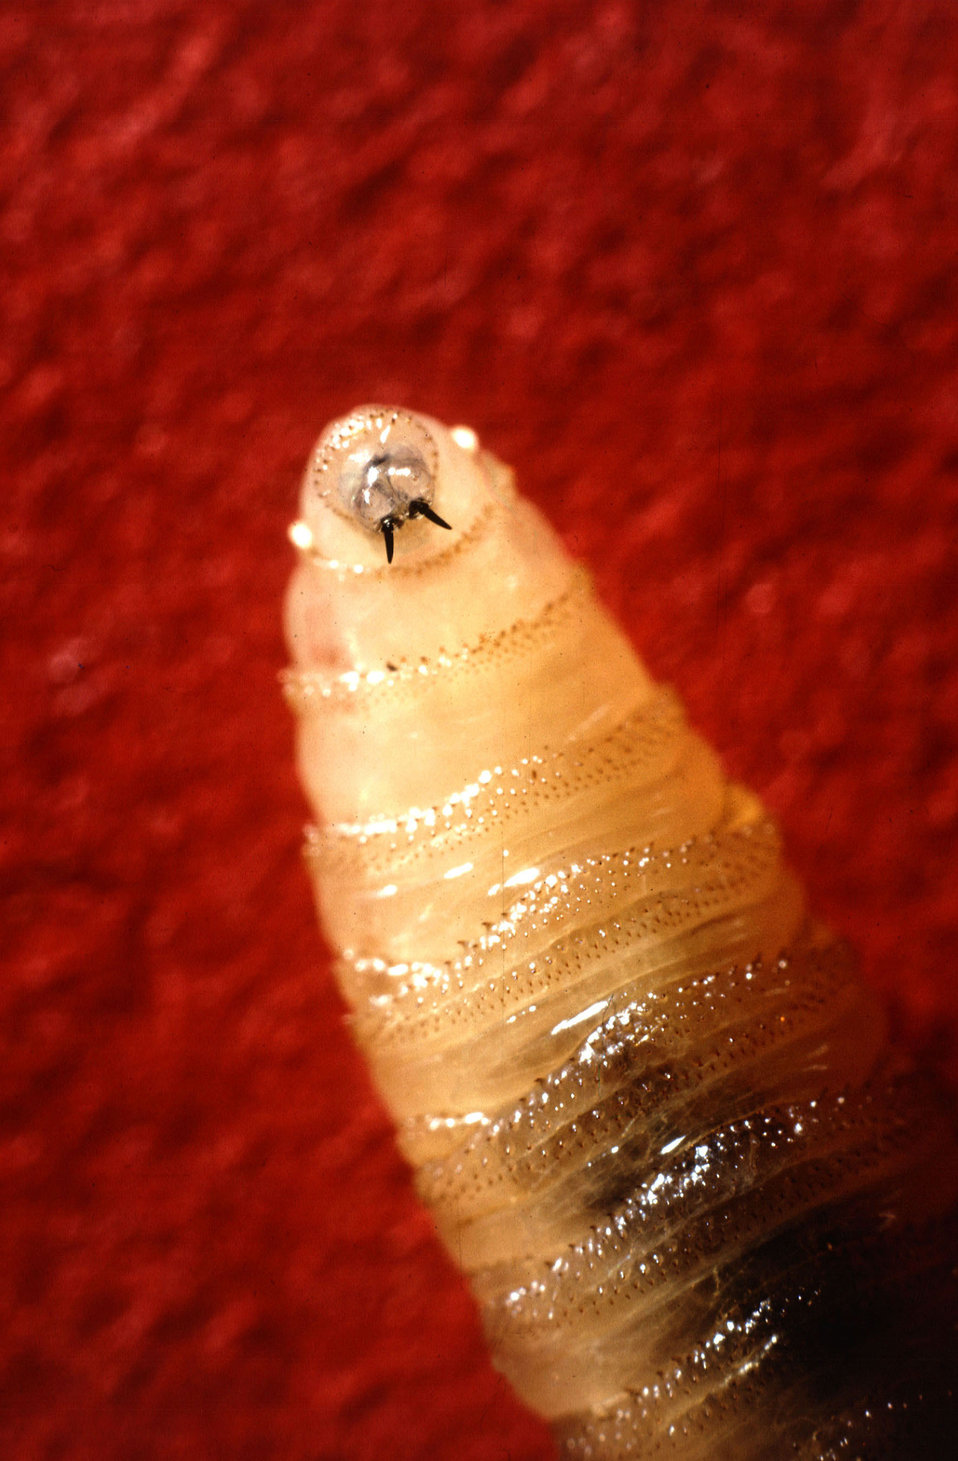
Tusklike mandibles protruding from the screwworm larva's mouth rasp the flesh of living warm-blooded animals. A wound may contain hundreds of such larvae.